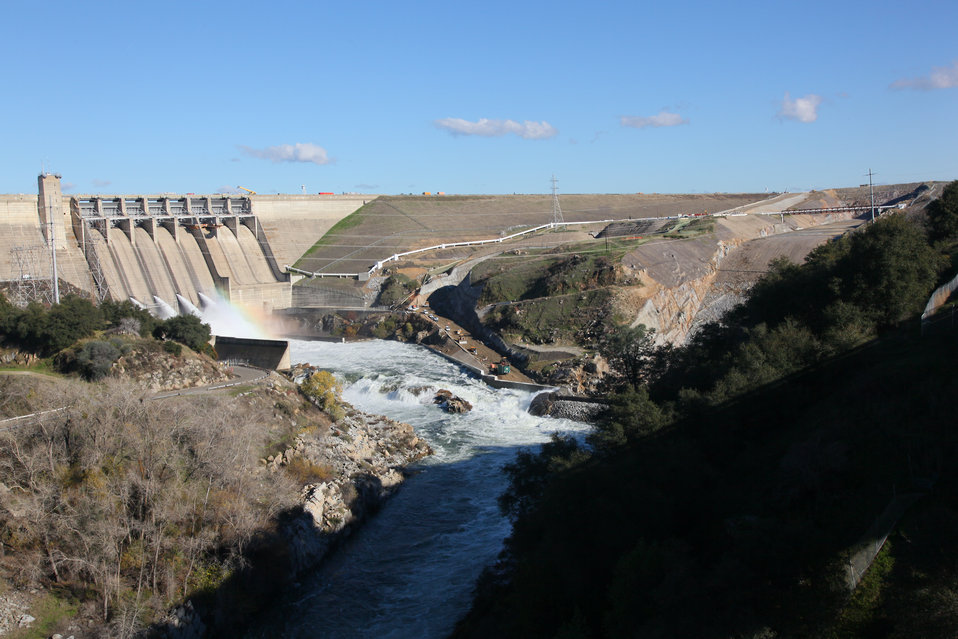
Folsom Dam Water Release

FOLSOM, Calif. (Dec. 17, 2010) - Water releases from Folsom Dam into the American River reached 30,000 cubic feet per second here Dec. 16. The releases were made as a precautionary measure to increase storage capacity in the lake with the impending heavy rainstorms due to arrive here in the next few days.